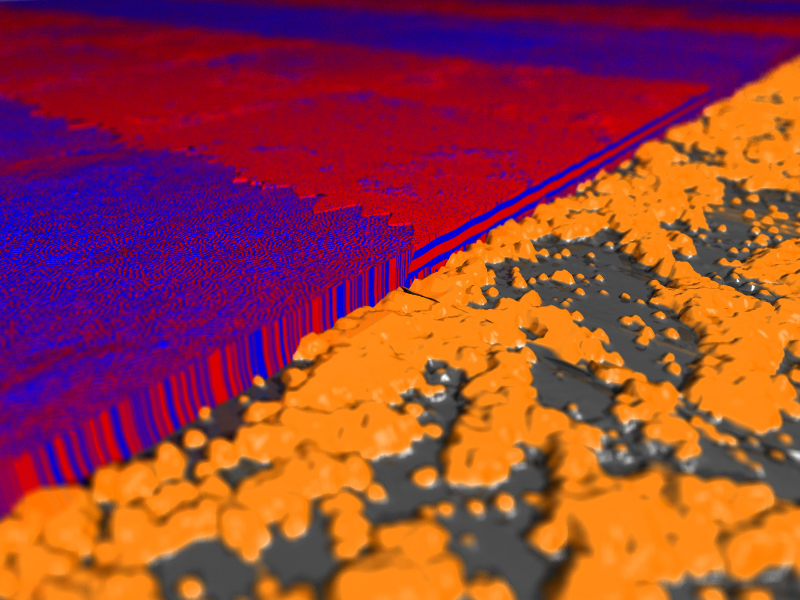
Nanostructures

A novel technique for controlling the orientation of nanostructures (red and blue) is to use disordered, roughened substrates. Silica nanoparticles (orange), cast onto silicon substrates (grey), create 'tunable' substrates which can control self-assembly, despite inherent disorder.